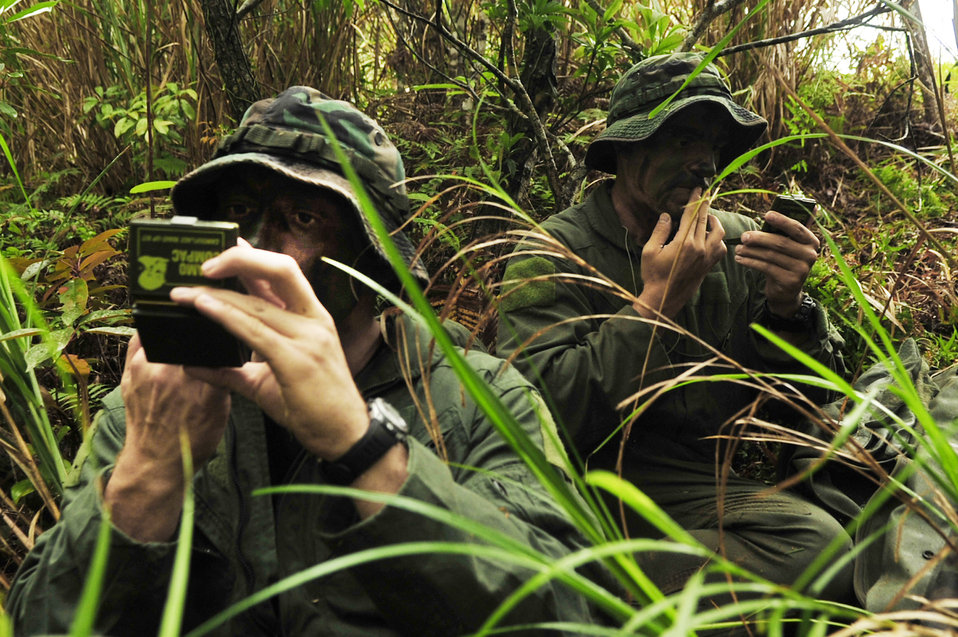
Survival and Evasion Training

Capt. Aaron Wallace (left) and 1st Lt. Joseph Bisson, both pilots from the 909th Air Refueling Squadron, apply camouflage during an evasion scenario after a simulated KC-135 crash at Kadena Air Base, Japan, March 25, 2010. Members of the 909th ARS trained in proper survival and evasion procedures as part of a local operational readiness exercise.